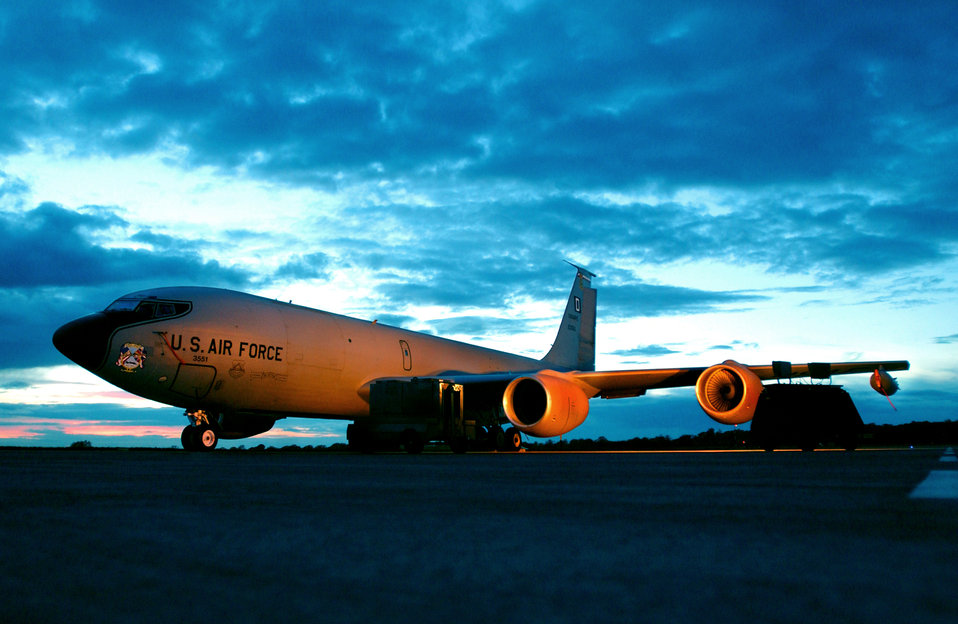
Away on vacation

ROYAL AIR FORCE FAIRFORD, England -- A KC-135 Stratotanker sits on a hardstand here May 7. The tanker is deployed from Royal Air Force Mildenhall while the runway there is closed for repaving.